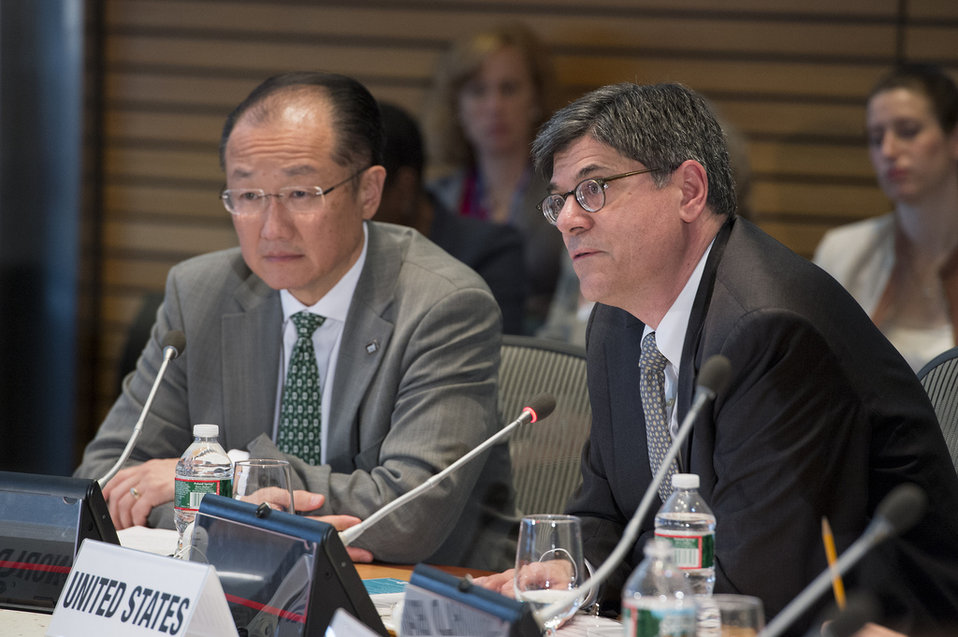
Equal Futures Partnership: From Promise to Progress 2013 Spring Meetings

April 18, 2013 - Washington DC., 2013 World Bank / IMF Spring Meetings. Equal Futures Partnership: Breaking Down Barriers to Women's Political and Economic Empowerment with World Bank Group President Jim Yong Kim; U.S. Treasury Secretary Jack Lew, Senior Advisor to the President of the United States Valerie Jarrett, moderated by World Bank Group Managing Director Caroline Anstey.